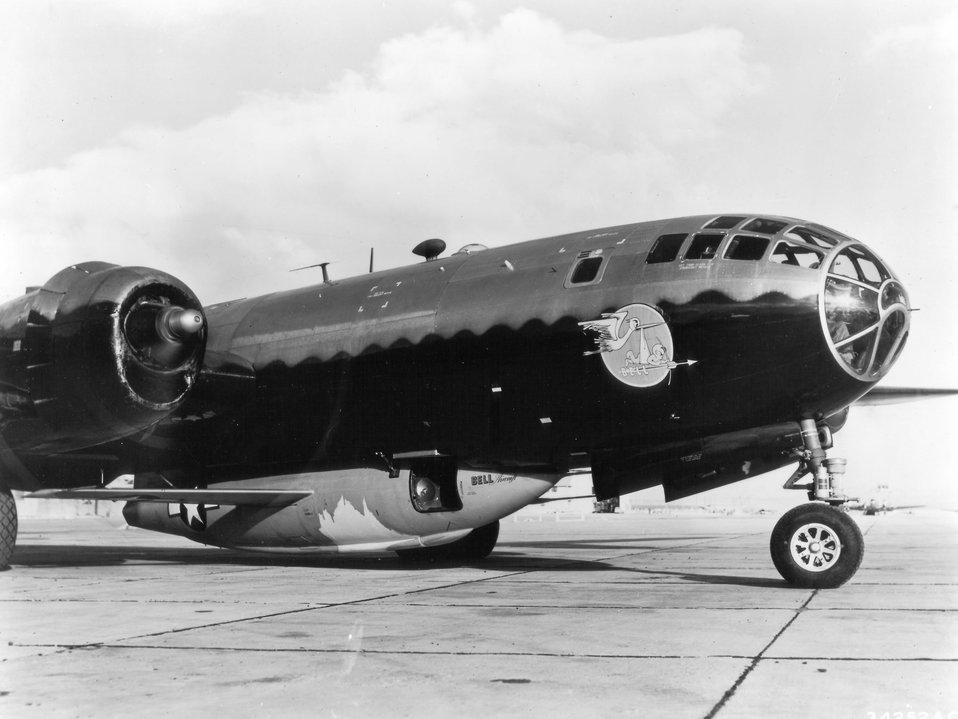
Bell X-1A in the belly of a B-29

1940's -- Bell X-1A resting in the belly of a B-29.